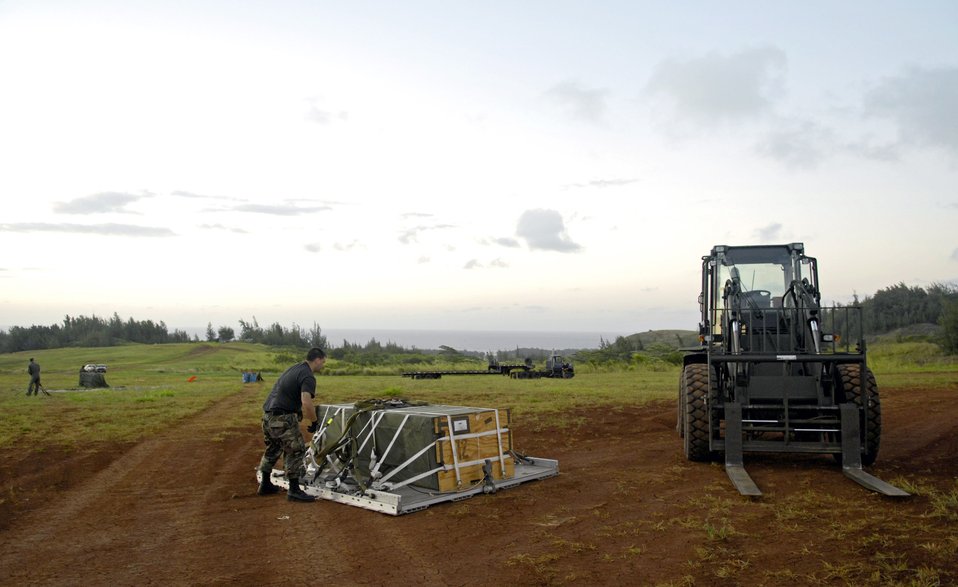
Load 'em up, drop 'em out

Airman 1st Class Justin Stevens prepares a practice airdrop bundle to be picked up after being dropped from a C-17 Globemaster III June 11 at the Kahuku Training Range in Hawaii. The C-17s, from the 535th Airlift Squadron at Hickam Air Force Base, are being run for quarterly airdrop qualifications. Airman Stevens is an air transportation specialist from the 15th Logistics Readiness Squadron Combat Mobility Element.